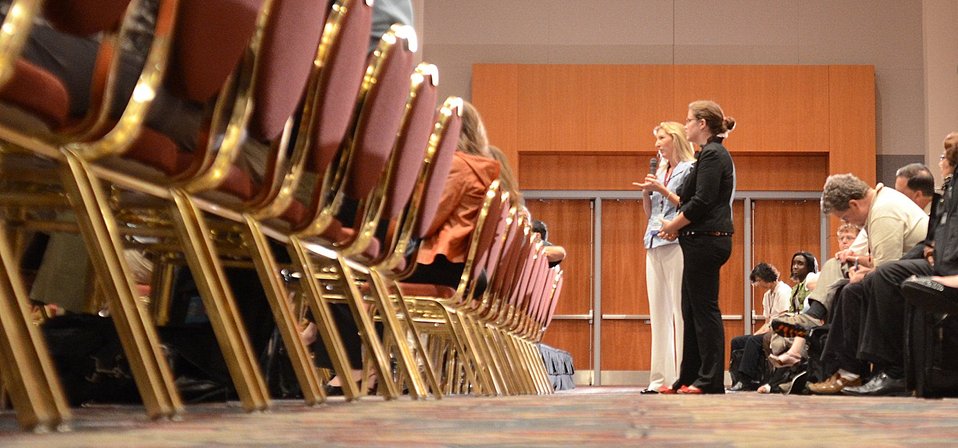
A member of the audience asks Agriculture Secretary Tom Vilsack a question at the International Association for Food Protection (IAPP) 100th annual meeting in Milwaukee, WI, on Wednesday, August 3, 2011. IAPP is committed to providing members worldwide with a forum to exchange information on protecting the global food supply.